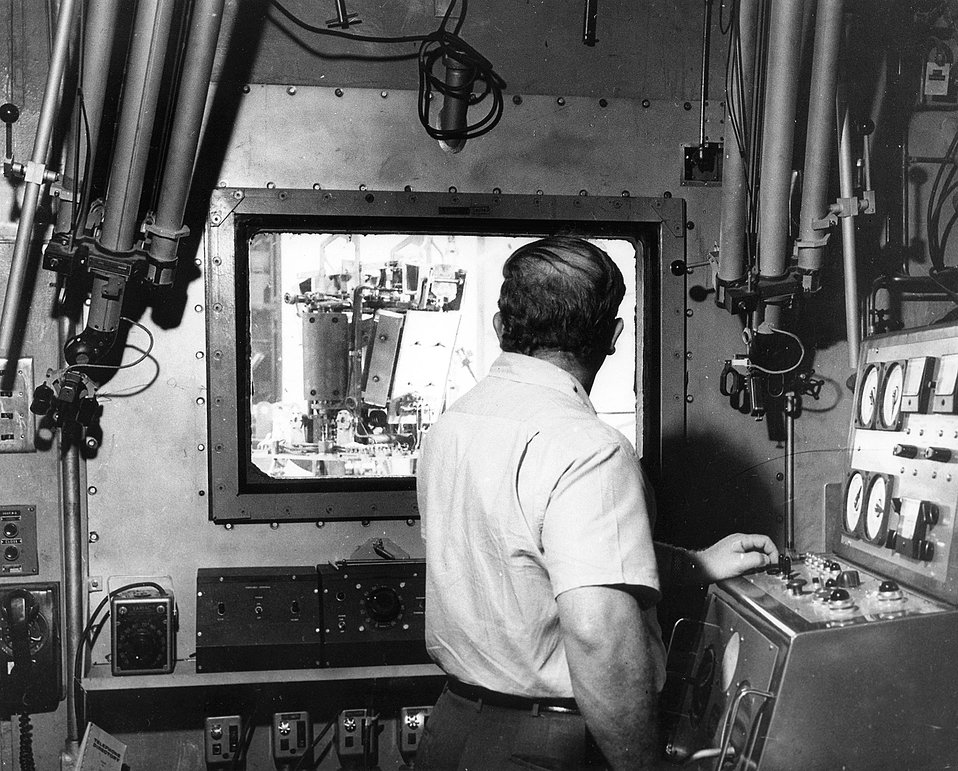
The reflector control assembly for the SNAP 2 Development reactor is shown being disassembled at the Nuclear Field Laboratory of Atomic International.